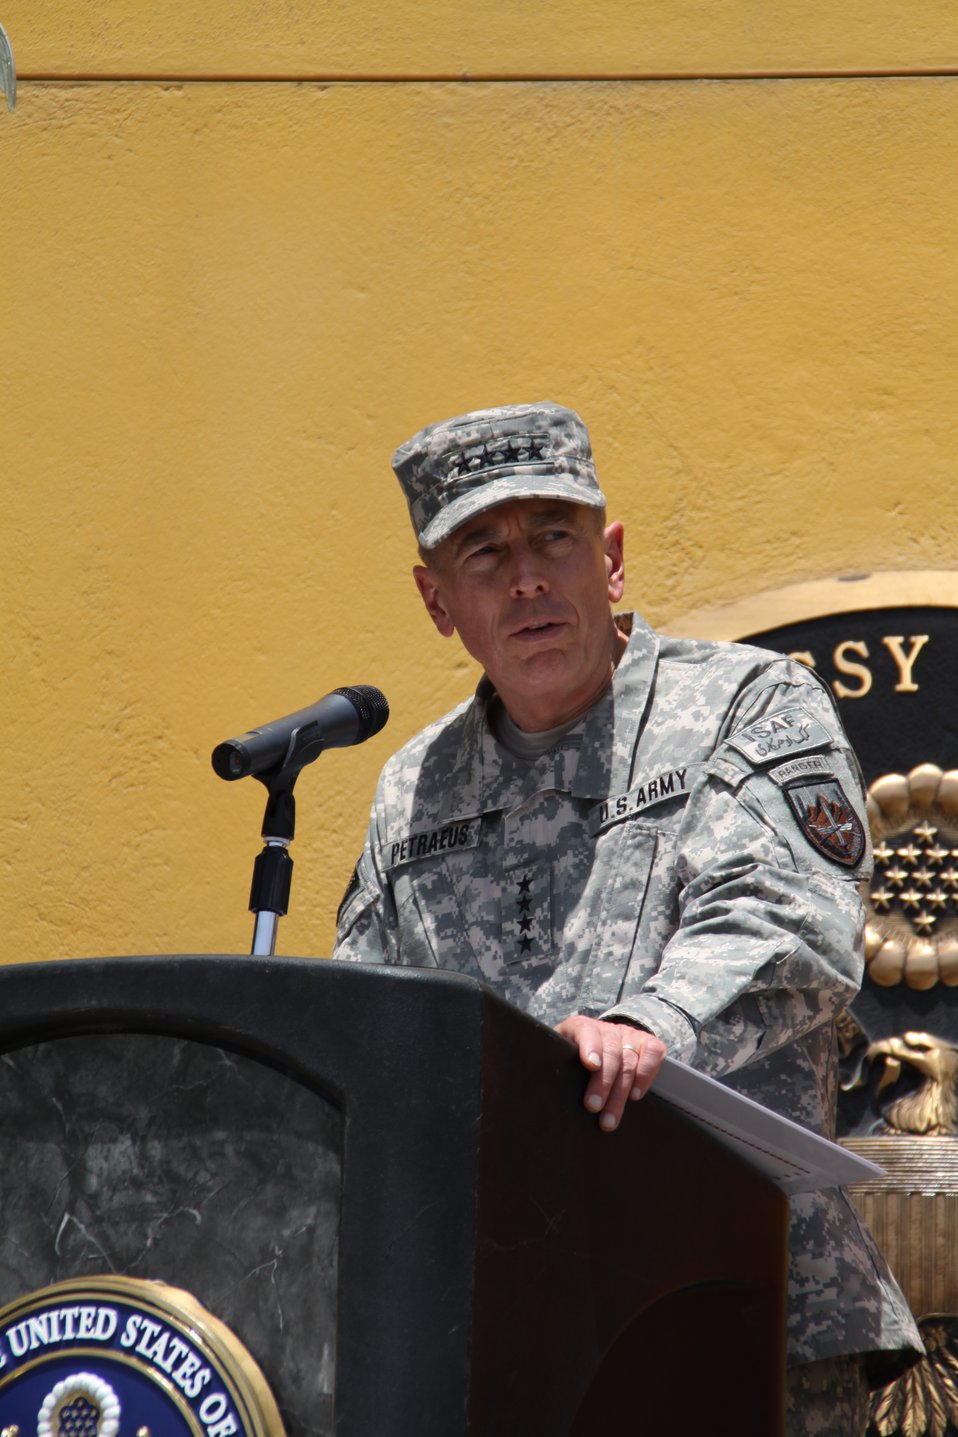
Kabul Official July 4th Celebration